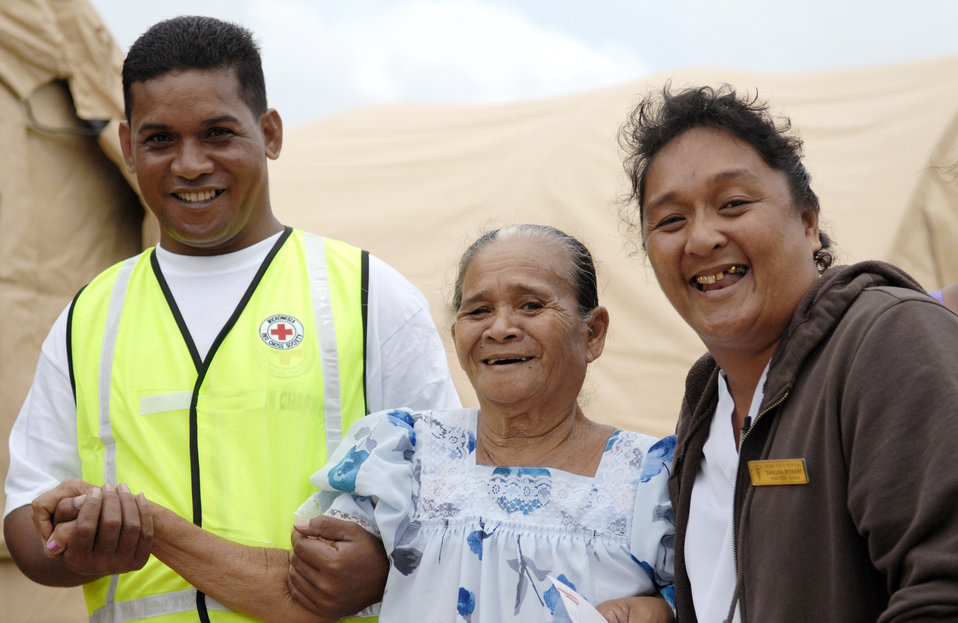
Air Force physician applies research to humanitarian exercise

A Chuukese woman is escorted by two volunteers after receiving treatment from the humanitarian assistance rapid response team during a validation exercise Sept. 3, 2009, on Chuuk, in the Federated States of Micronesia. The team is the Air Force's new expeditionary medical capability designed to deploy within 24-hours of notice during disaster relief operations. Based at Andersen Air Force Base, Guam, the team provides basic medical care and public health assistance to 350-500 patients per day.